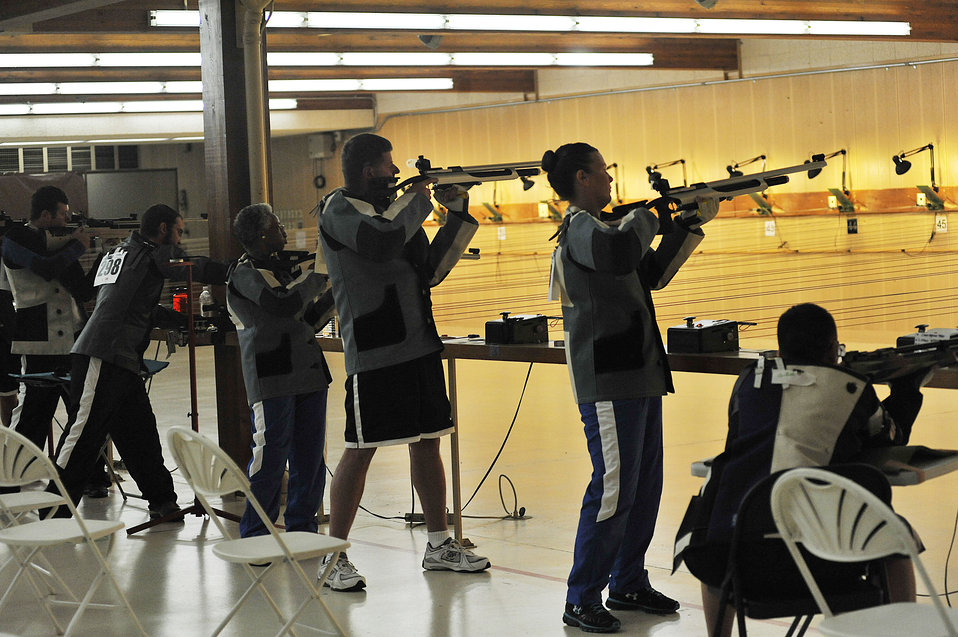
Warrior Games

Stacy Pearsall, second from right; U.S. Air Force Maj. Scott Bullis, center, and Gwen Sheppard, third from left, fire their rifles at target during the shooting competition of Warrior Games 2012 at the Olympic Training Center in Colorado Springs, Colo., May 3, 2012. Sepulveda is with the Air Force team.